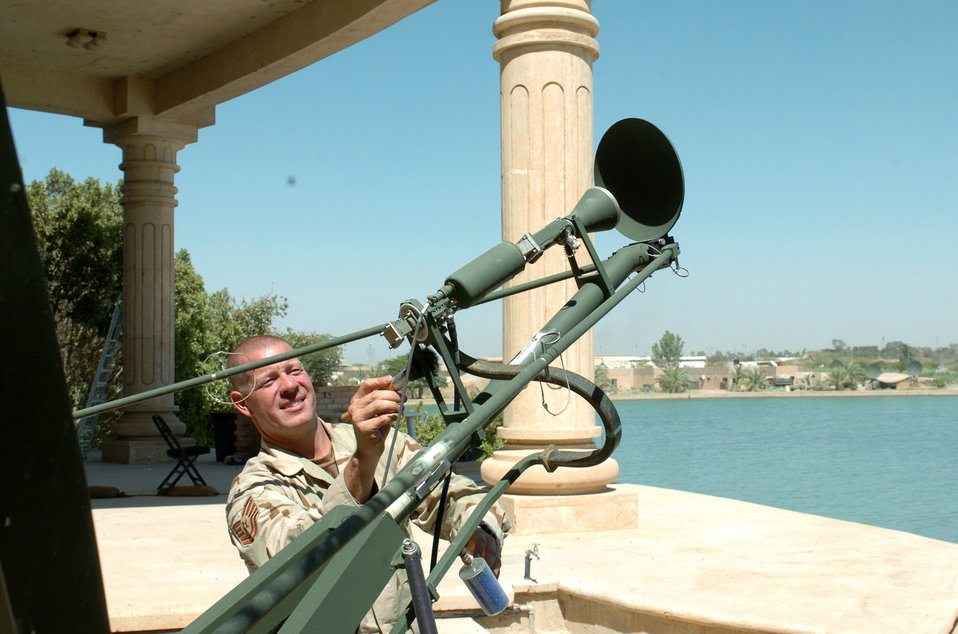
Ensuring communication

BAGHDAD, Iraq -- Keeping satellite receivers free of debris is just part of a daily checklist for Tech. Sgt. Davi Novak, a noncommissioned officer in charge of satellite communications in Iraq. He is deployed here as part of a tactical air control party team responsible for calling in air support for Army missions.